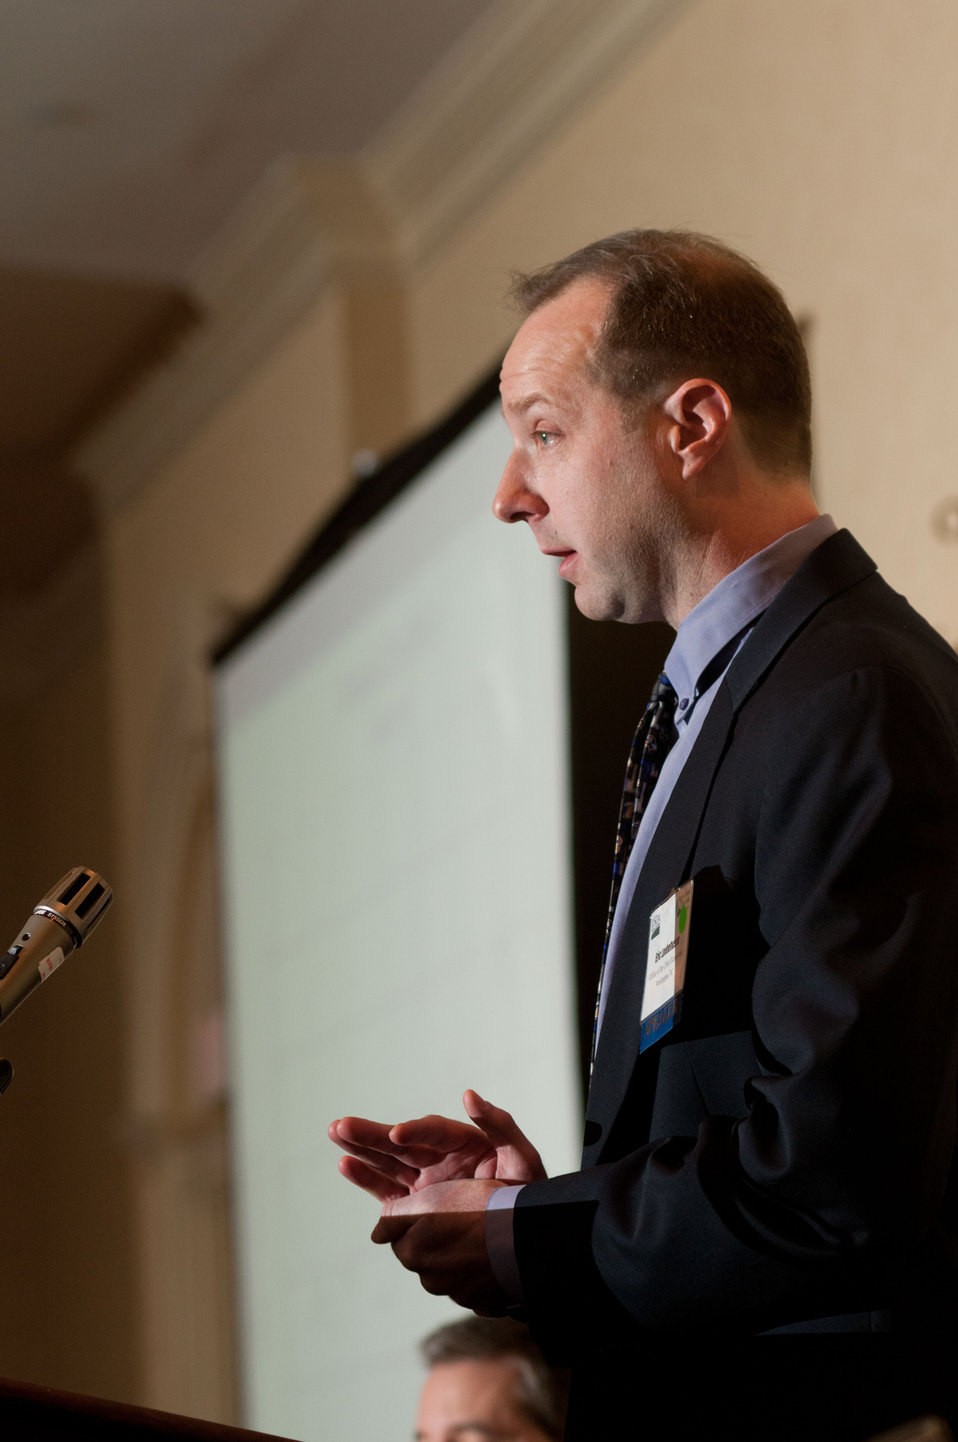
The U.S. Department of Agriculture (USDA) Office of the Chief Economist (OCE),Agricultural Meteorologist Eric Luebehusen, presented the 2012 Weather Review , during the 2013 Agricultural Outlook Forum was held at the Crystal Gateway Marriott Hotel in Arlington, VA on Friday, Feb. 22, 2013. The breakout session is generally focused on the Weather Outlook for 2013. The presentation is available at www.usda.gov/oce/forum/presentations/Rippey2.ppt.